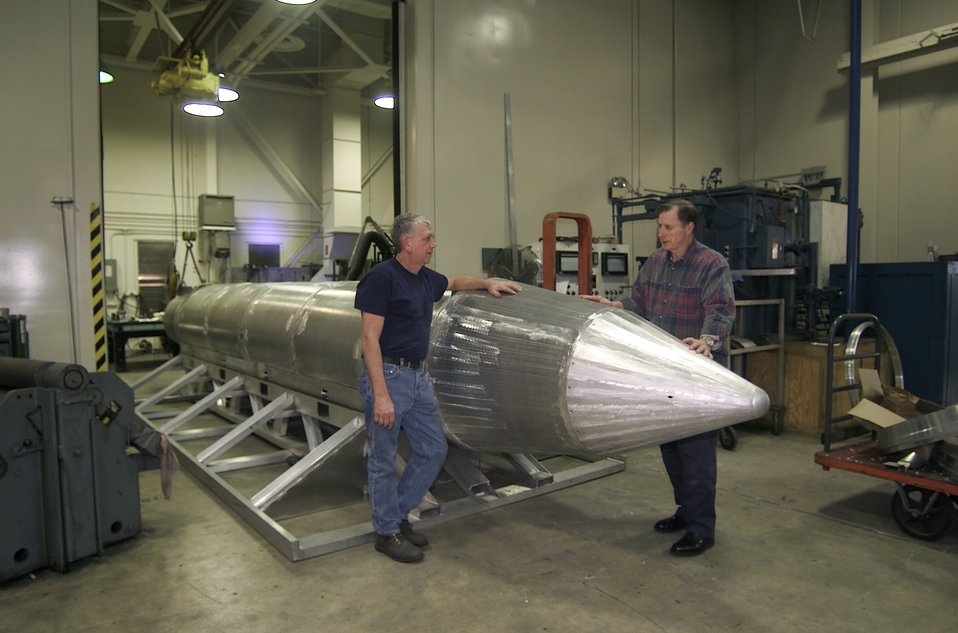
The 'Mother of All Bombs'

Al Weimorts (left), the creator of the GBU-43/B Massive Ordnance Air Blast bomb, and Joseph Fellenz, lead model maker, look over the prototype of the bomb before it was painted and tested.